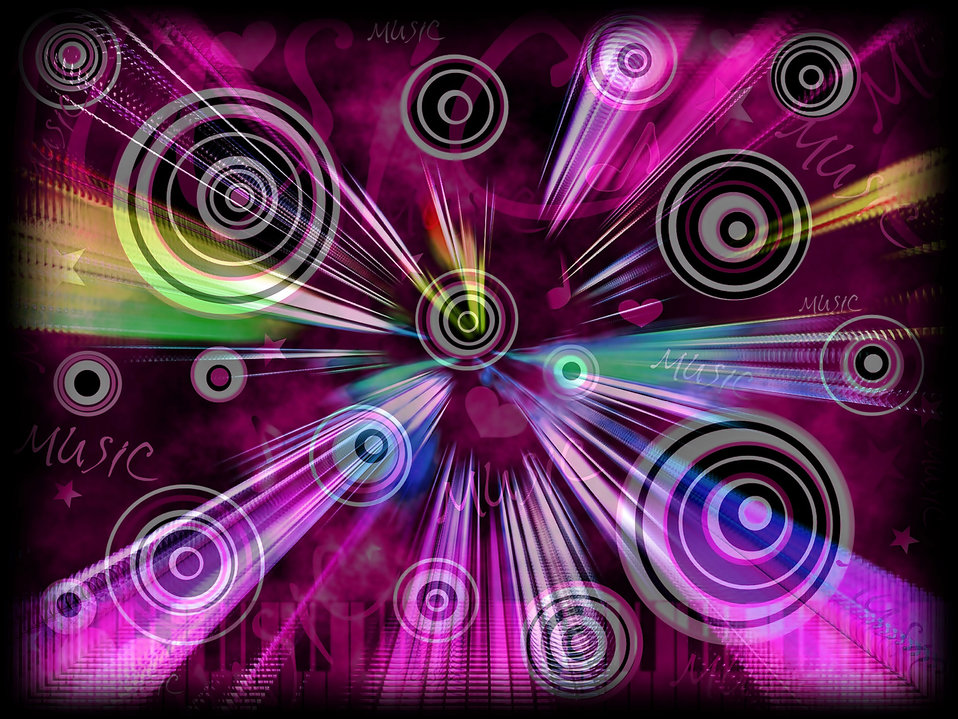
Music background 2

Background music.